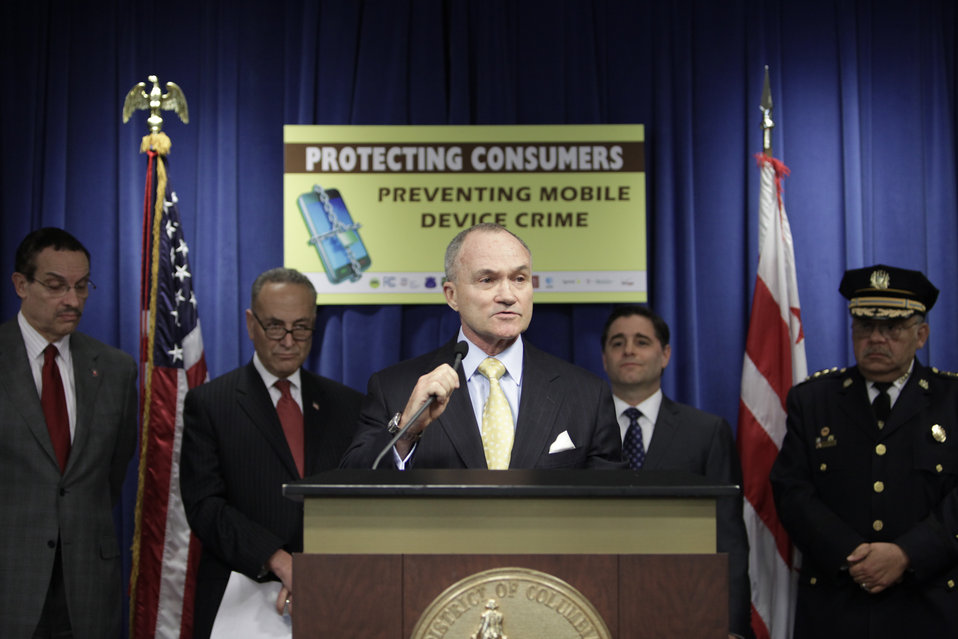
Commissioner Ray Kelly Speaks in Support

Commissioner Ray Kelly of NYPD speaks in support of protecting consumers and curb smartphone & device theft at the John A. Wilson Building in Washington, DC on April 10, 2012.